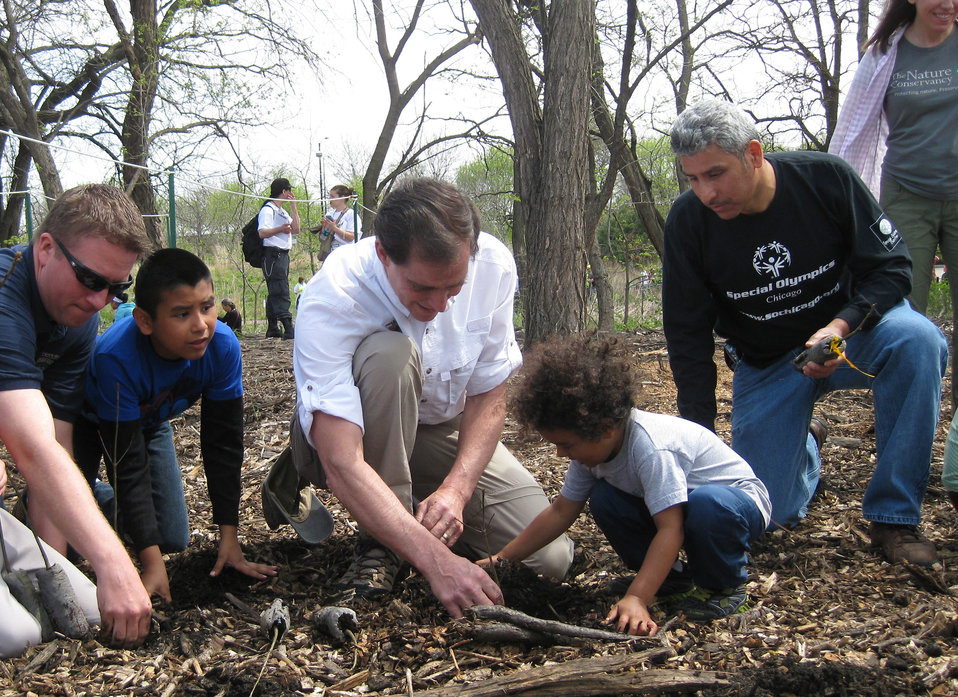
Dan Ashe helps plant seedlings

Chicago Park District Burnham Corridor Community Planting Day
May 10, 2014
Photo by USFWS; Louise Clemency